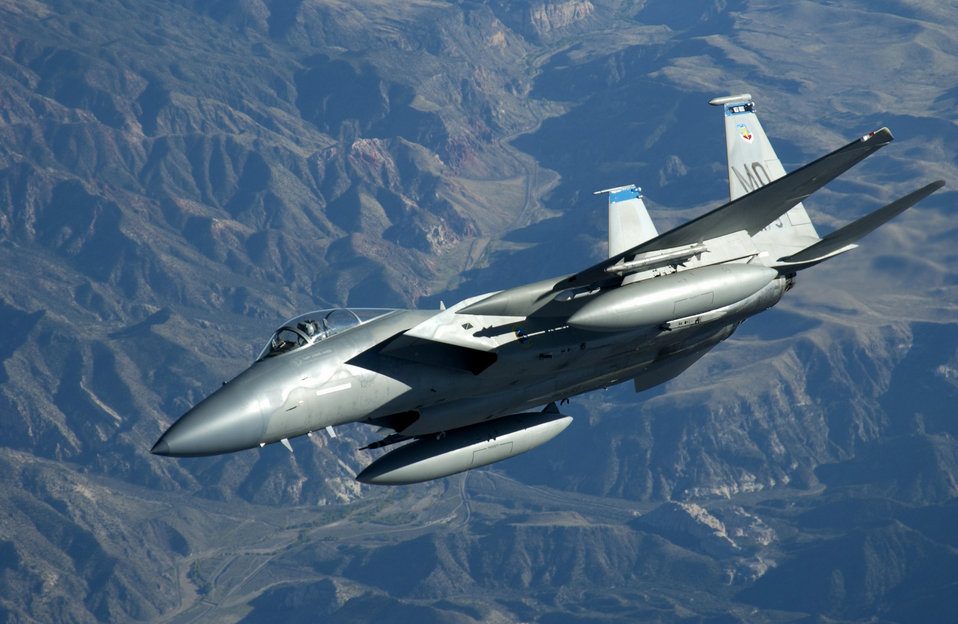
CENTAF Air Power Summary Feb 14

An F-15 Eagle, similar to this one, conducted an air strike on enemy forces in Afghanistan, halting attacks against coalition troops and stopping an enemy rocket attack.